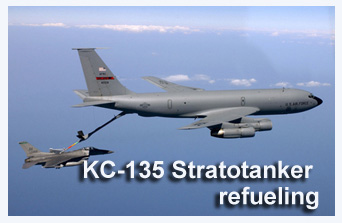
KC-135 Stratotanker refuelings

On May 31, 1967, an aircrew on a KC-135 Stratotanker carried out a series of emergency refuelings that saved six fuel-starved Navy fighters.